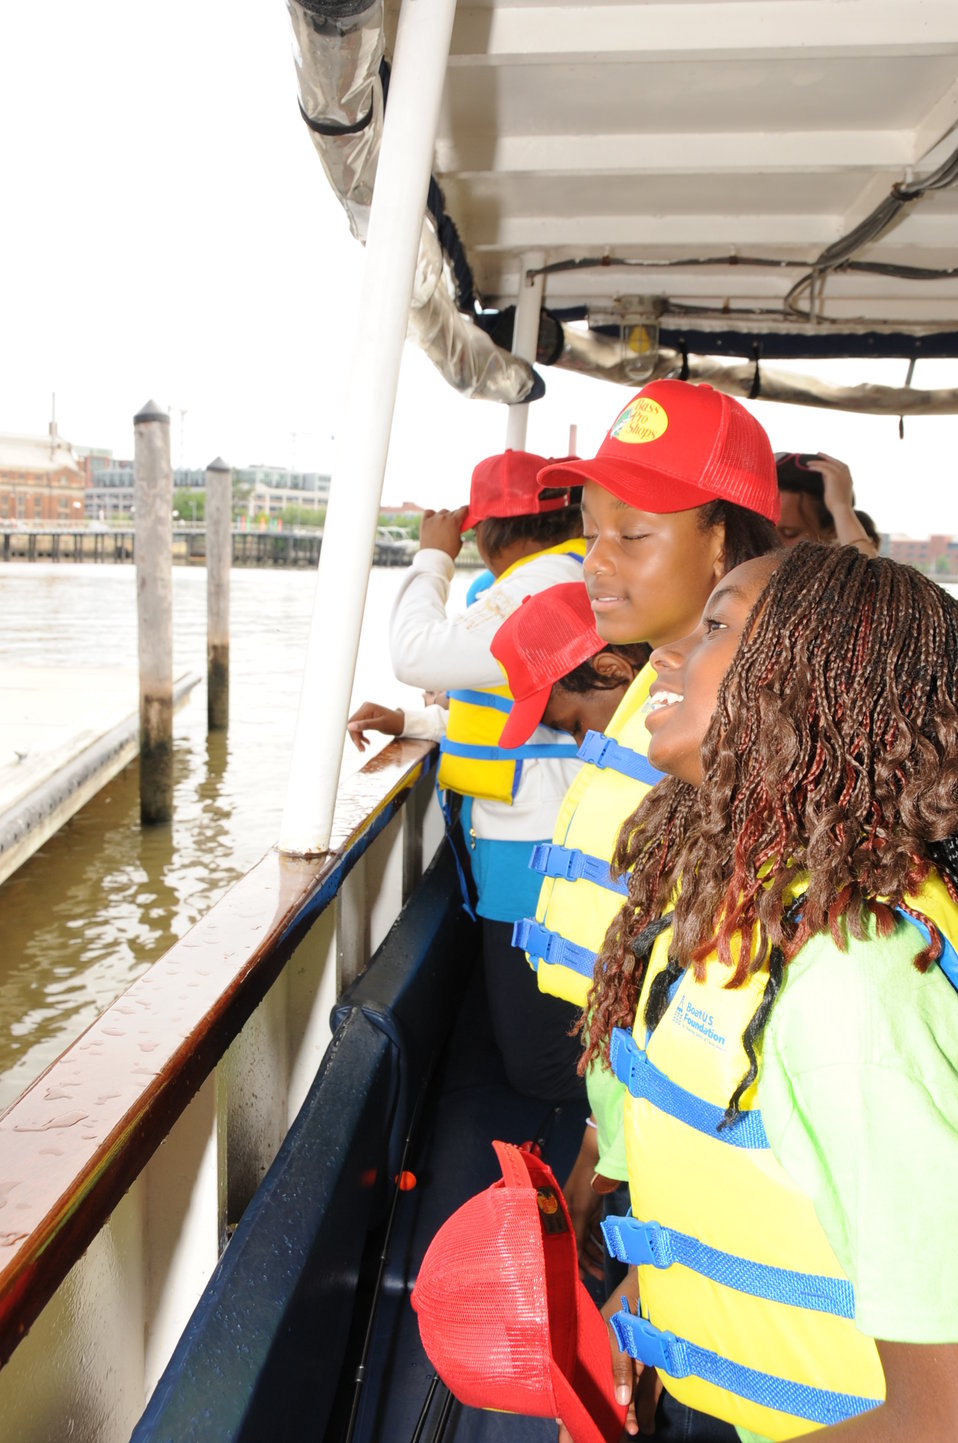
2013 National Fishing and Boating Week

Local students prepare to enjoy fishing at the annual kick-off of National Fishing and Boating Week on the Anacostia River in Washington D.C.